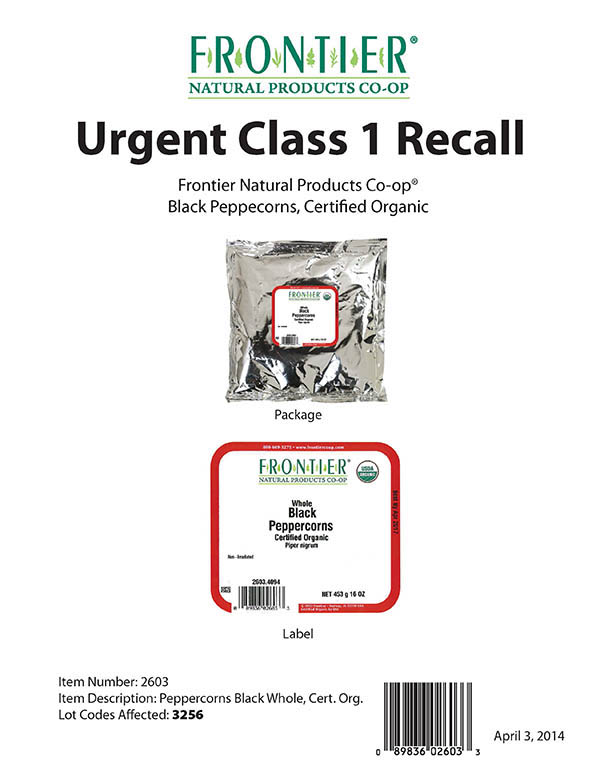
RECALLED – Organic Black Peppercorns

April 4, 2014 – Product Recall – Frontier Natural Products Co-op Initiates Voluntary Class 1 Recall Due to Possible Health Risk from Organic Black Peppercorns.